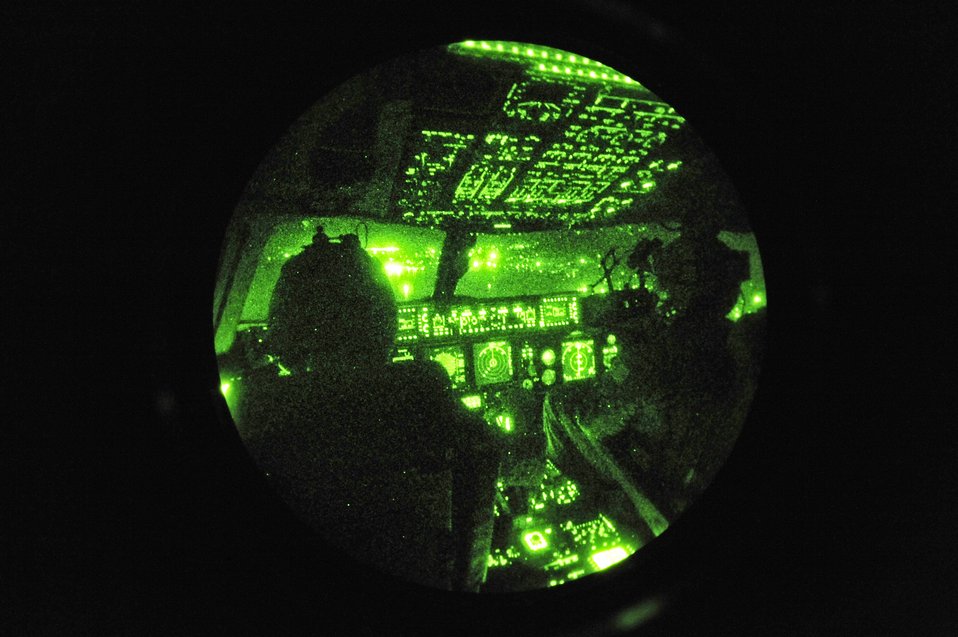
Light up the night

Capt. Thomas Crittenden and 1st Lt. John McDaniel pilot a C-17 Globemaster III aircraft that is participating in relief efforts Jan. 16, 2010. The Airmen are with the 15th Airlift Squadron at Charleston Air Force Base, S.C.